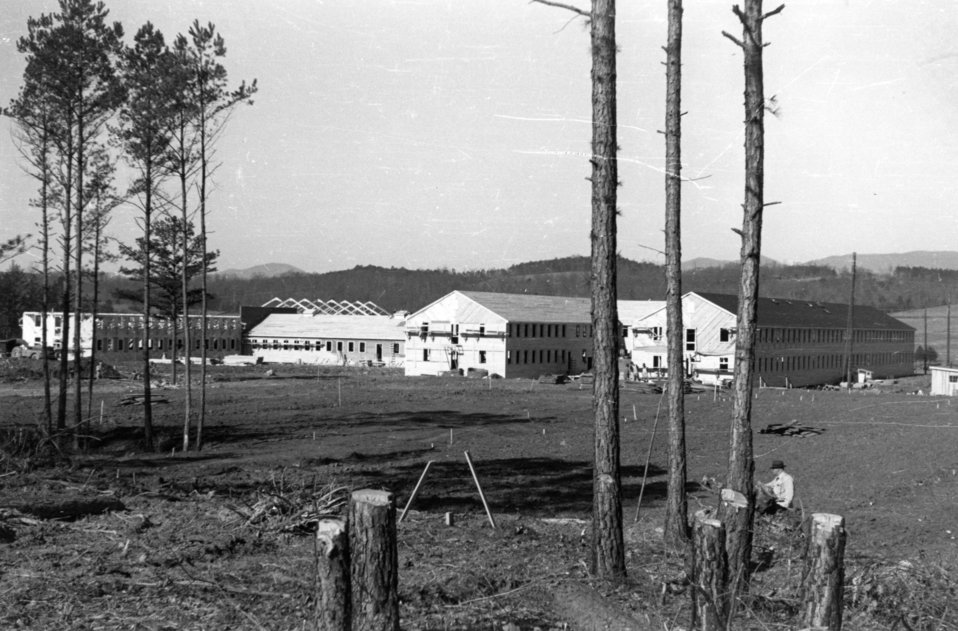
Construction activity at Oak Ridge